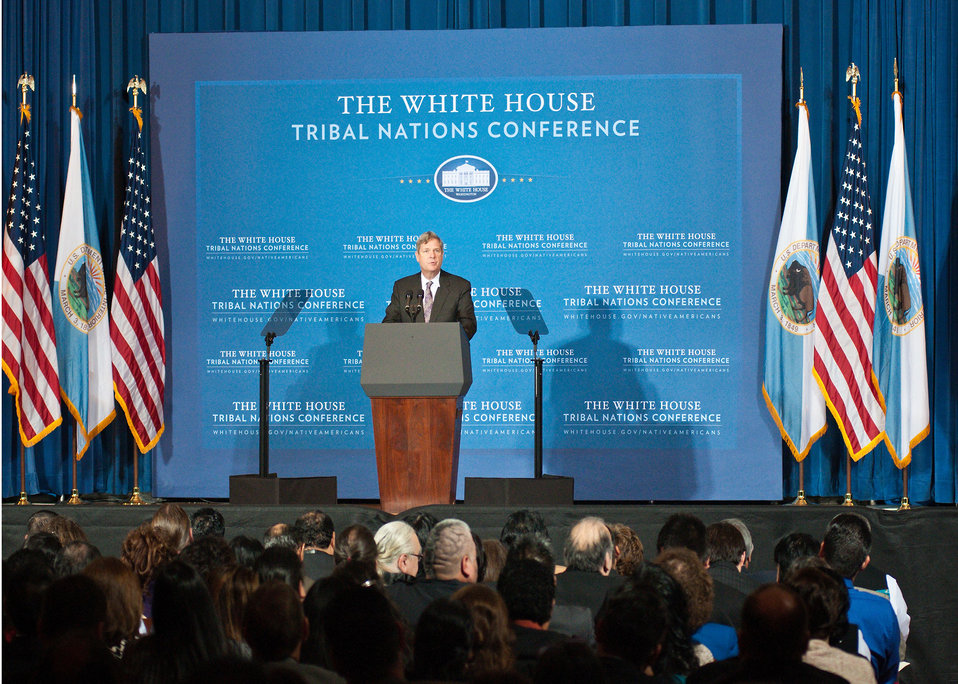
Agriculture Secretary Tom Vilsack speaks at the Fourth Annual White House Tribal Nations Conference at the U.S. Department of Interior in Washington D.C. on Wednesday, Dec. 5, 2012. Cabinet members Interior Secretary Ken Salazar, Agriculture Secretary Tom Vilsack, Education Secretary Arne Duncan, Treasury Deputy Secretary Neal Wolin, Commerce Acting Secretary Rebecca Blank, Health and Human Services Secretary Kathleen Sebelius discussed the gains and progress of the Obama Administration concerning Native American Tribal Nations.